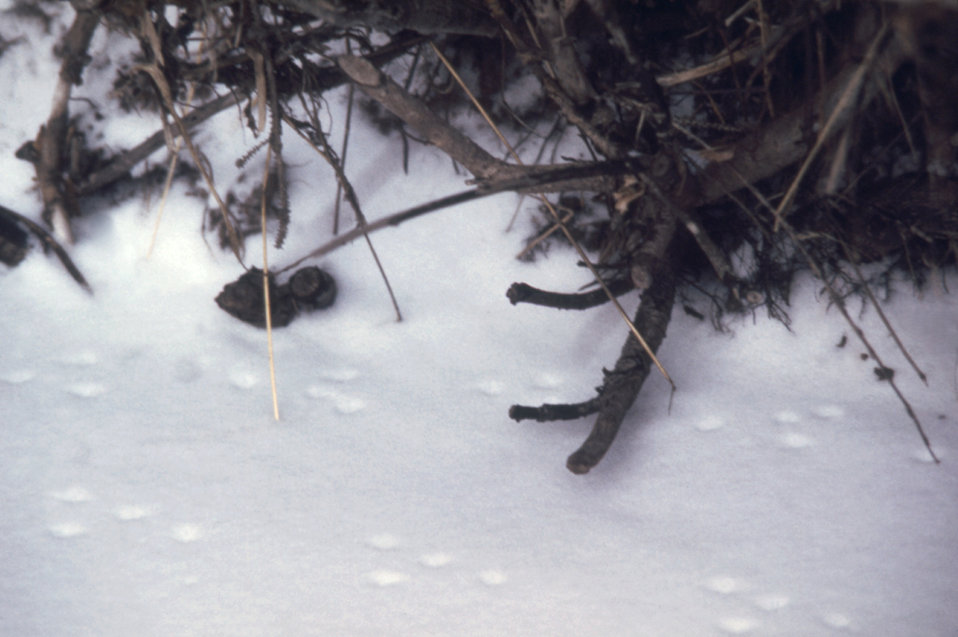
These tracks were made by a deer mouse, Peromyscus maniculatus, the major carrier of Sin Nombre virus, in Estes Park, Co.